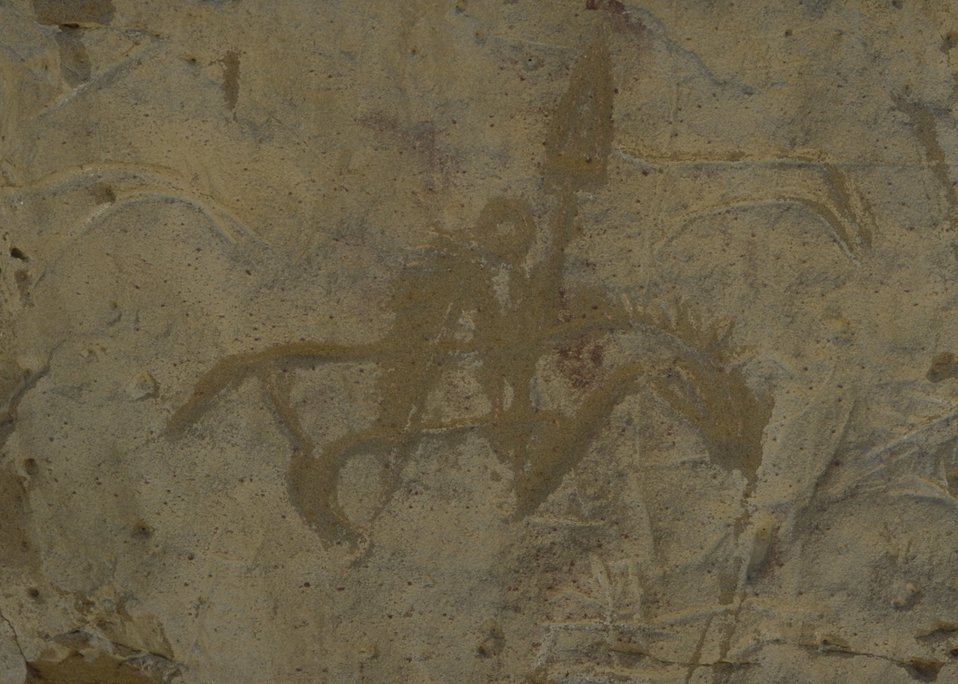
White Mountain Petroglyphs, Rock Springs Field Office.